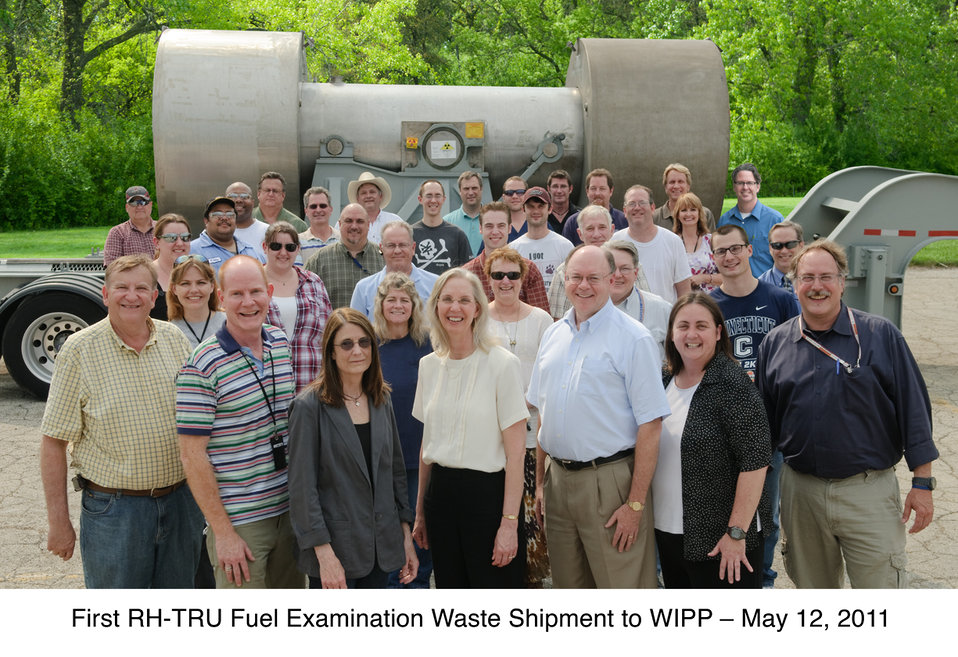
Argonne Recovery Act achievements

Argonne and DOE Argonne Site Office (ASO) personnel stand in front of Argonne’s first shipment of a new remote-handled transuranic waste (RH-TRU) stream to the Waste Isolation Pilot Plant in New Mexico for disposal in May 2011. Pictured in the front row are Willis Ray, RH Operations Superintendent, Argonne National Laboratory (ANL); Dale Dietzel, Federal Project Director for “Next Phase” TRU Waste Disposition Campaign, ASO; Sue Lorenz, Division Director, Waste Management Operations, ANL; Joanna Livengood, Manager, ASO; Andrew Gabel, Federal Project Director for Alpha Gamma Hot Cell Facility (AGHCF), ASO; Cindy Rock, Program Manager, Nuclear Operations Division, ANL; and Dan Pancake, Project Manager, AGHCF “Next Phase” TRU, ANL.